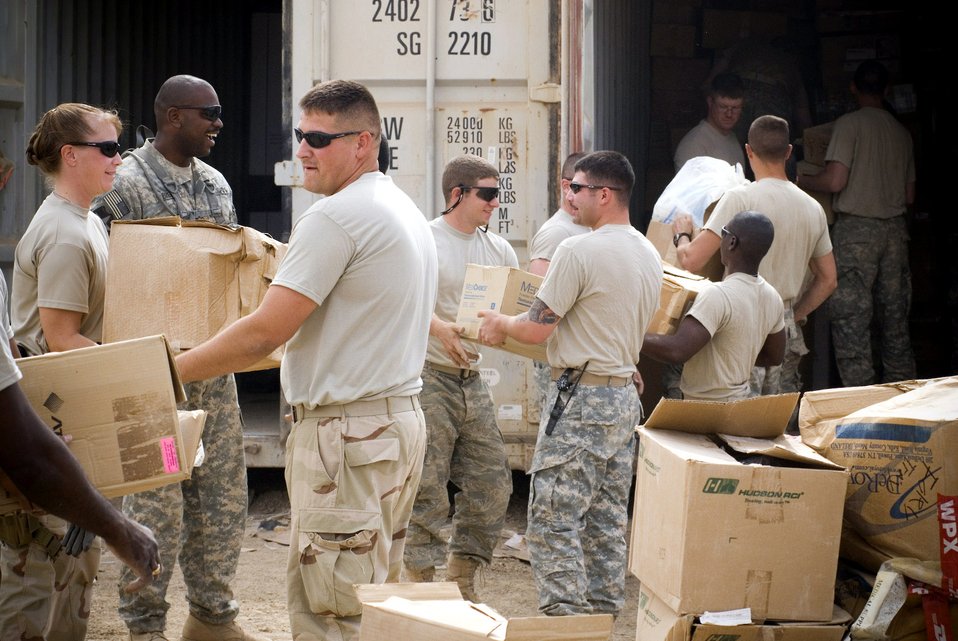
Mobile readiness team supports Army in Iraq

Airmen from Material Recovery Team III with the 732nd Expeditionary Logistics Readiness Squadron and Soldiers from 1st Battalion 9th Infantry Regiment unload a container express Oct. 19 at Camp Corregidor, Iraq. Serviceable assets recovered from the container express are inventoried and redistributed to Army units throughout Iraq. Airmen of various career fields volunteer to augment the Army in nontraditional